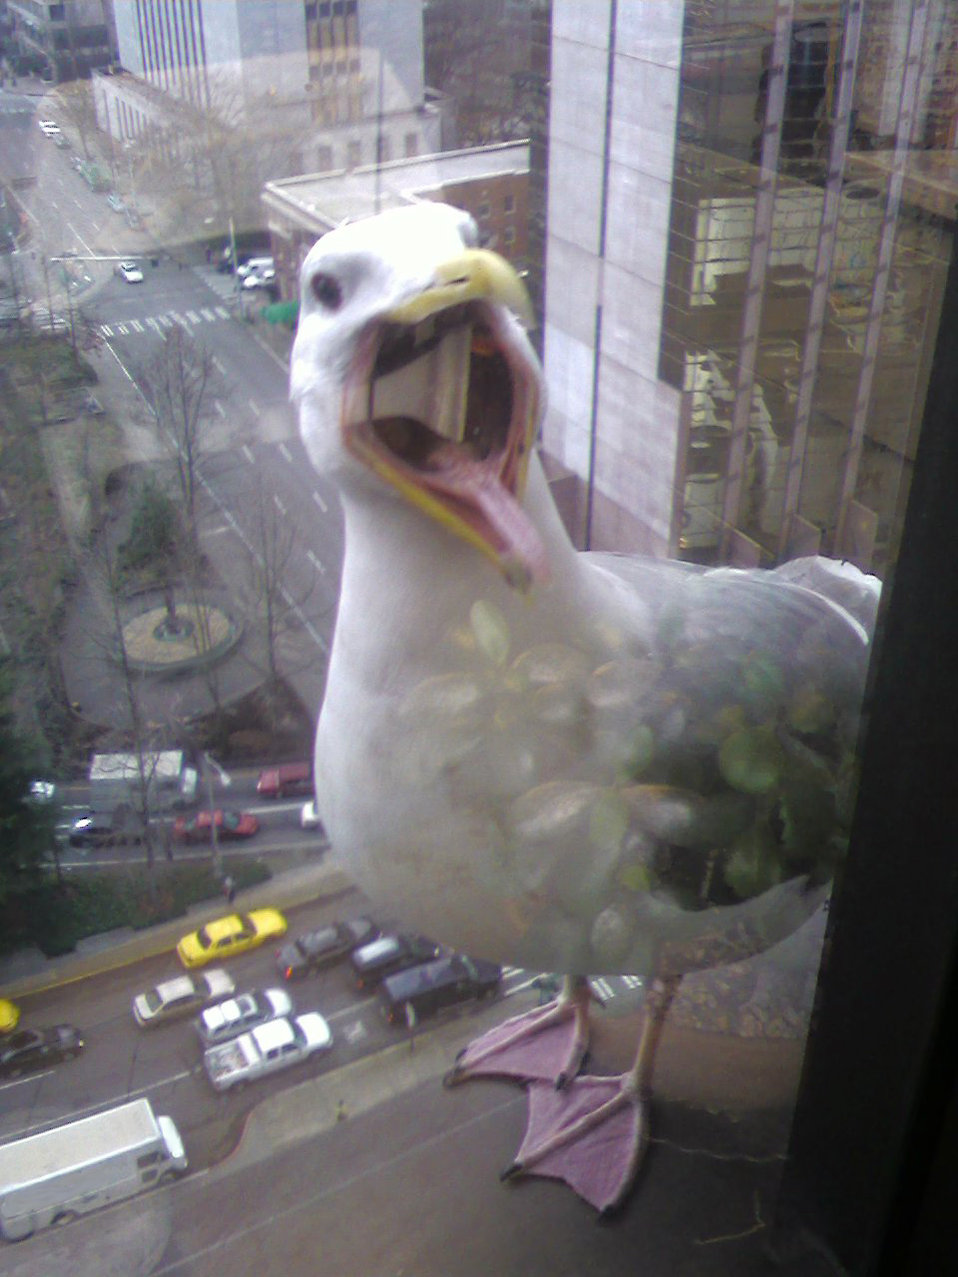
Uploaded by request of Barbara Lither

Taken in Seattle, Washington

I was at work in my 15th floor office in downtown Seattle when this seagull landed on my ledge and stayed for some time. I was on a conference call discussing environmental issues and this seagull seemed to feel strongly about something - and made its presence known.